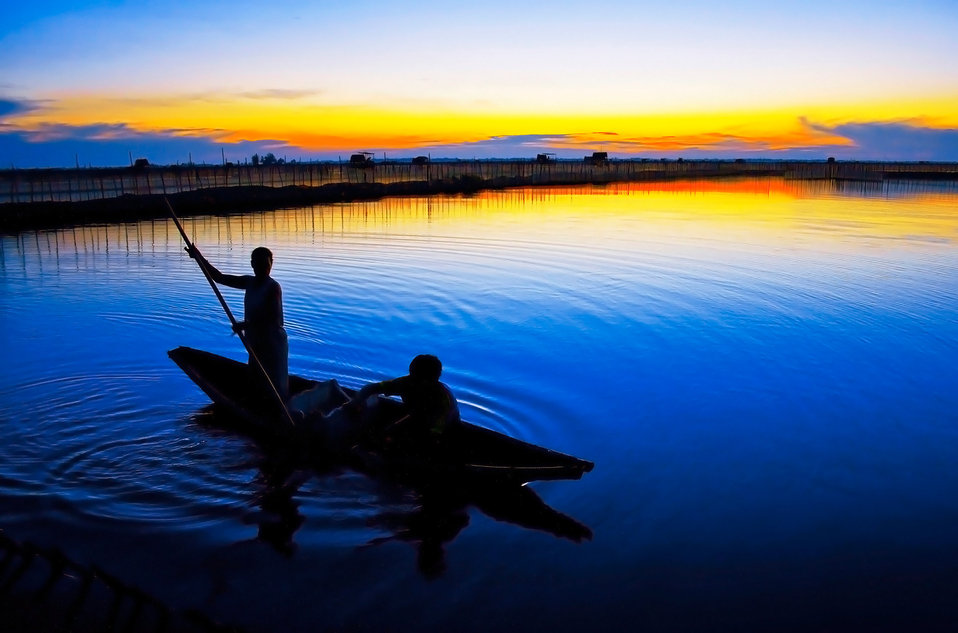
Working in dawn #1

Dawn in the lagoon, hue province, vietnam..